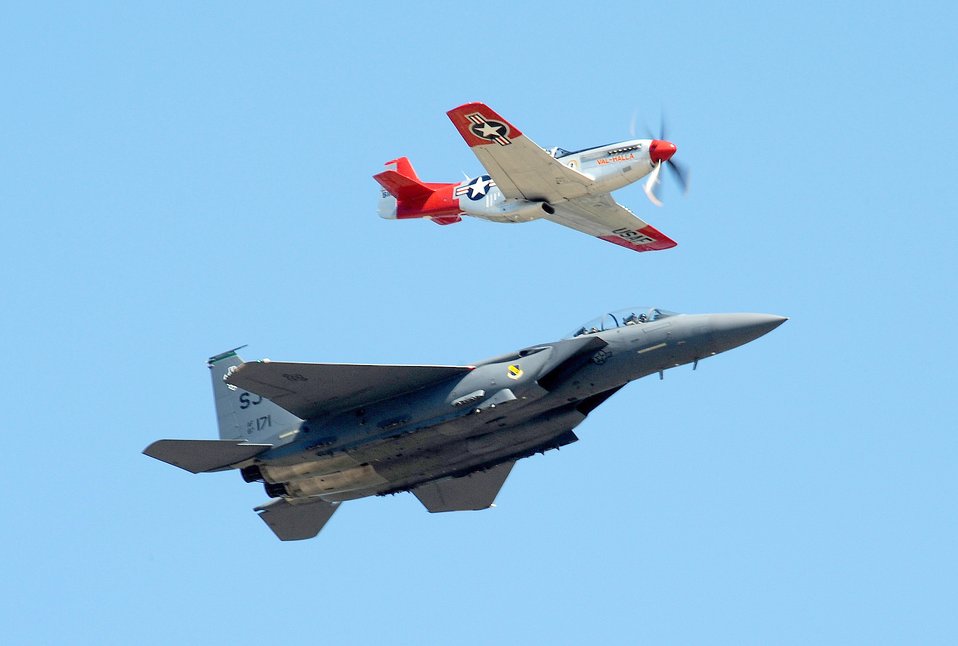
Hey old timer!

An F-15E Strike Eagle and P-51 Mustang perform a heritage flight Aug. 15, 2010, during the Abbotsford International Air Show in British Columbia. The F-15E is assigned to the 4th Fighter Wing at Seymour Johnson Air Force Base, N.C.